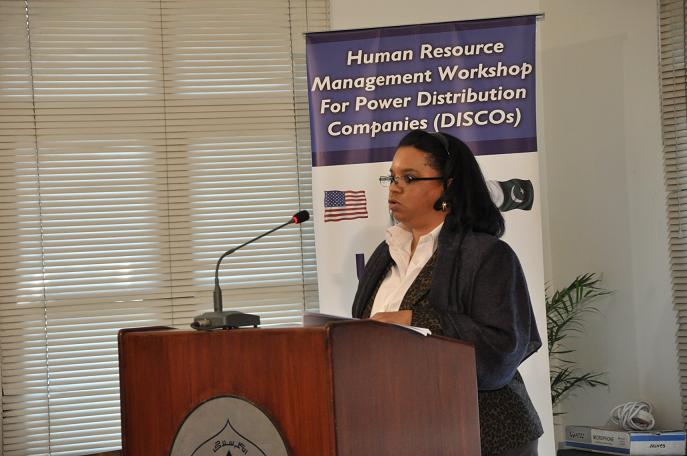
Ms. Gail Spence ( deputy Director USAID Punjab)